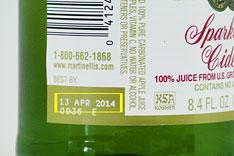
RECALLED – Sparkling Cider

December 30, 2011 – Product Recall – Voluntary Recall of Limited Quantity of 6-pack 250 mL Martinelli’s Gold Medal Sparkling Cider.